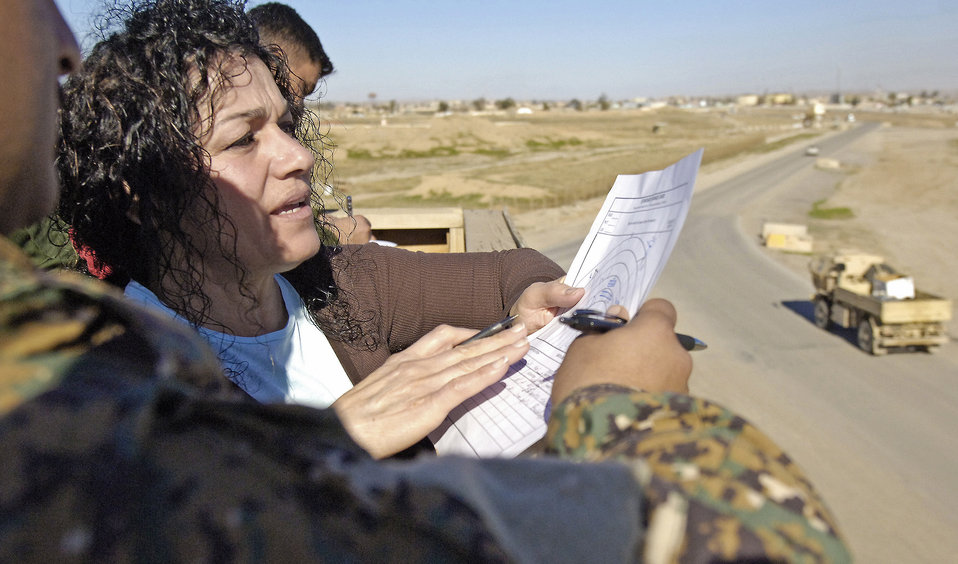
Airmen, Soldiers train Iraqi airmen